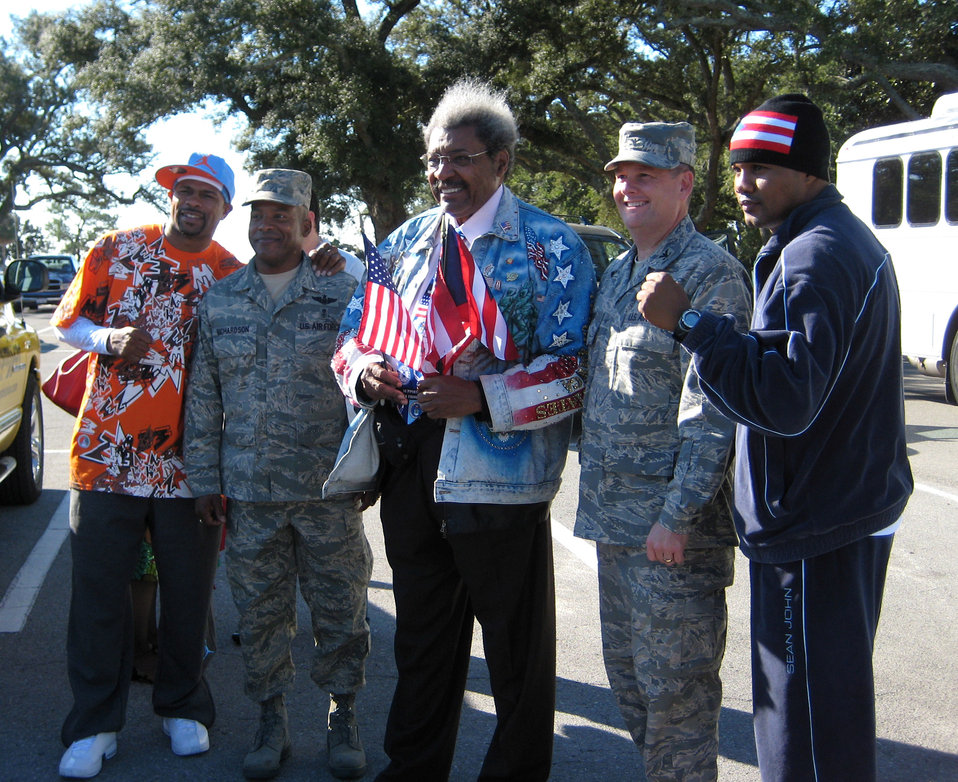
Boxing trio visits Hurlburt Field Airmen

Boxer Roy Jones Jr. (left to right), Chief Master Sgt. Jeffrey Richardson, boxing promoter Don King, Col. Brad Webb and boxer Felix Trinidad pose in the parking lot of The Soundside before the boxing trio sets off on a Dec. 5 tour of Hurlburt Field, Fla. The boxers and their promoter visited Hurlburt Field as part of their tour of military installations to show support for military members. Chief Richardson is the 1st Special Operations Wing command chief, and Colonel Webb is the 1st SOW commander